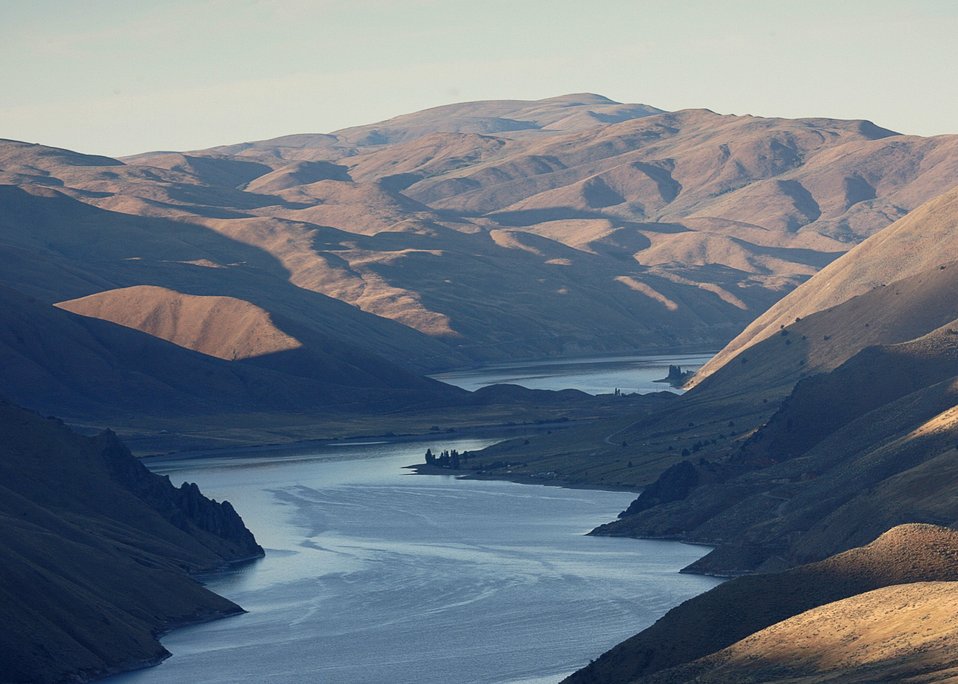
Sunrise on the Snake River Backcountry Byway.